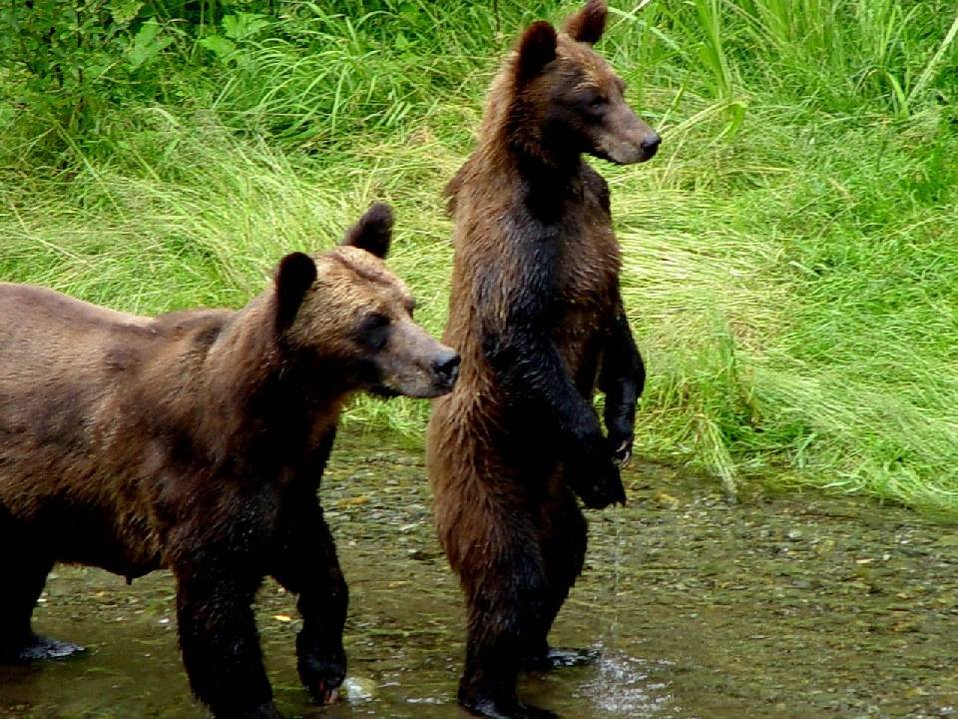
Hyder bear7cub

Alaska and brown bears are virtually synonymous, and this young bear shows he is as curious about visitors to Alaska as they are of him.